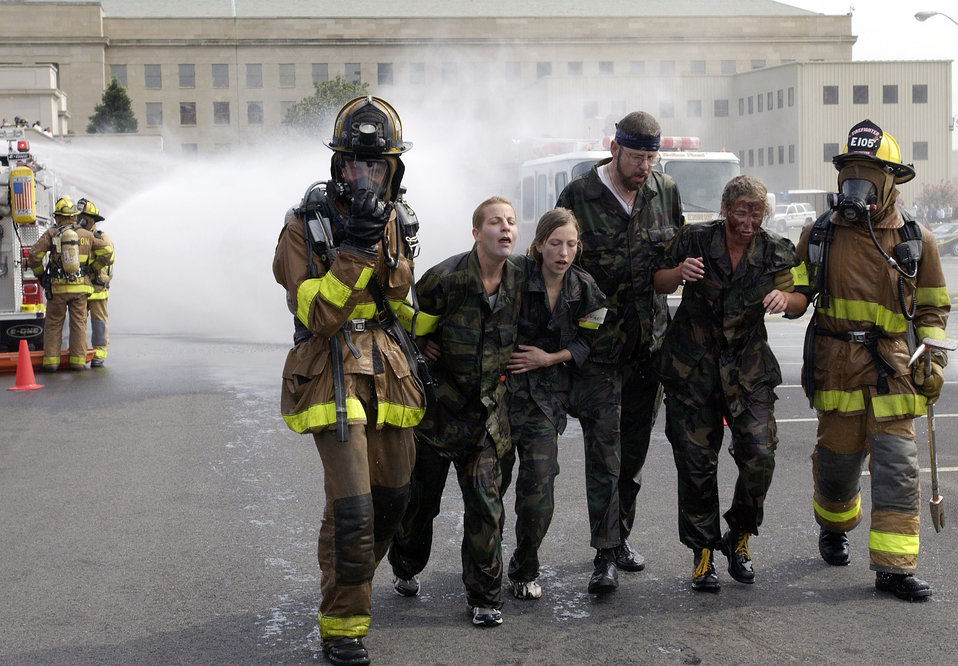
Gallant efforts

WASHINGTON -- Firefighters from Arlington County, Va., escort volunteer victims toward a simulated decontamination area in the Pentagon's south parking lot during exercise Gallant Fox on July 24. Gallant Fox is a large-scale chemical, biological, radiological and nuclear-training exercise conducted by the Pentagon Force Protection Agency. The exercise provides training in responding to real-world mass casualty scenarios by various local emergency fire, police, medical and hazardous-material response units.